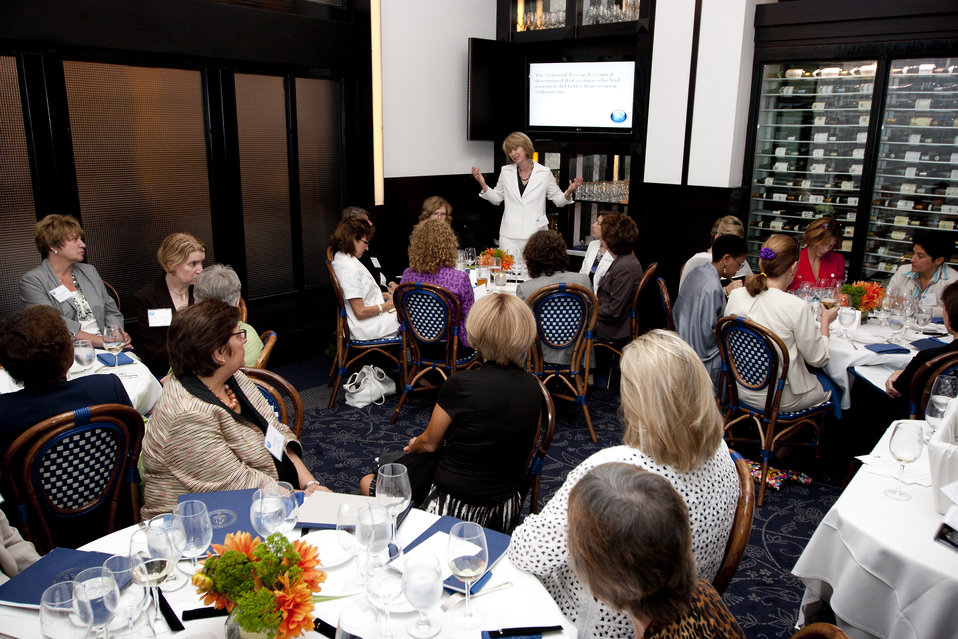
WomenandEnergy 50